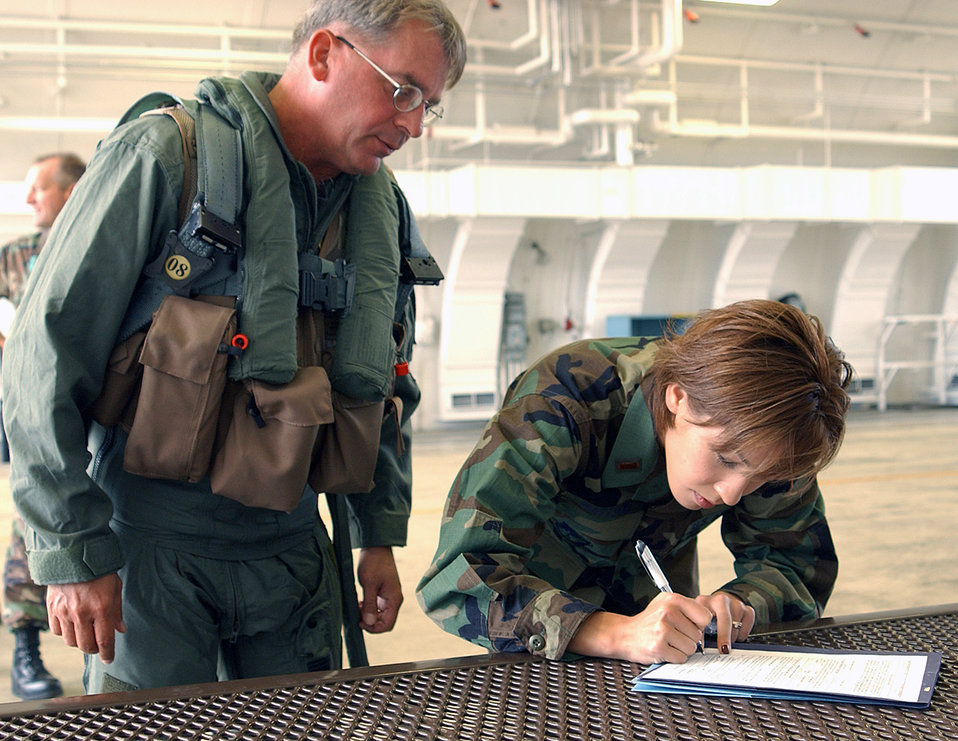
Do you swear, Dad?

MISAWA AIR BASE, Japan -- Second Lt. Sherry Mattson signs re-enlistment paperwork after administering the oath of enlistment to her father, Chief Master Sgt. Brett Allison, here Sept. 27. Lieutenant Mattson is a contracting officer for the 374th Airlift Wing, and Chief Allison is the 35th Operations Group superintendent.